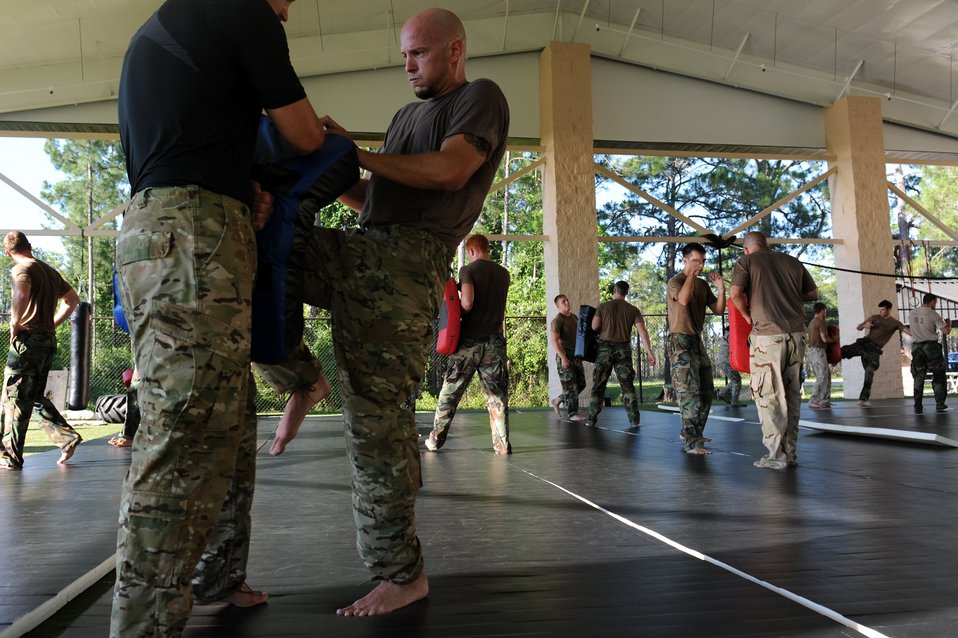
UFC fighter helps train battlefield Airmen

Airmen from the Special Tactics Training Squadron receive a combative class taught by Ultimate Fighting Championship Middleweight Alan Belcher June 8, 2010, at Hurlburt Field, Fla.